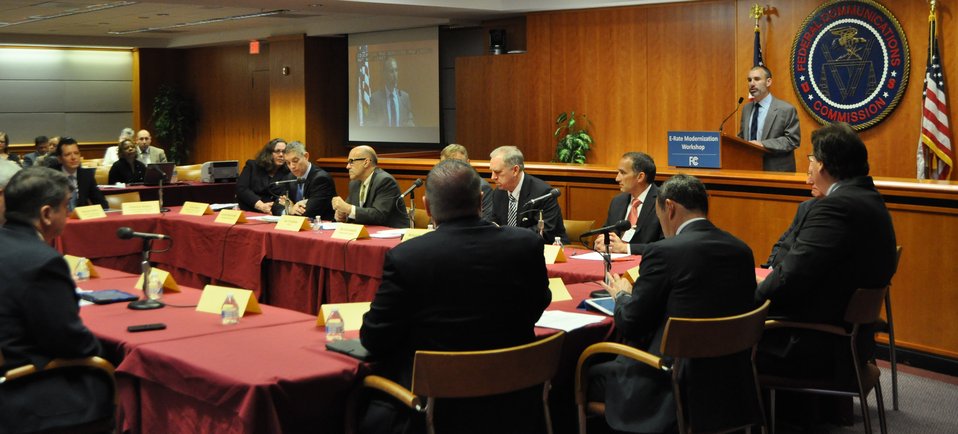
5.6.2014 E-Rate Modernization Workshop

Education and Library Technology Experts Roundtable: Enabling the Lowest “E-rate” for Schools and Libraries